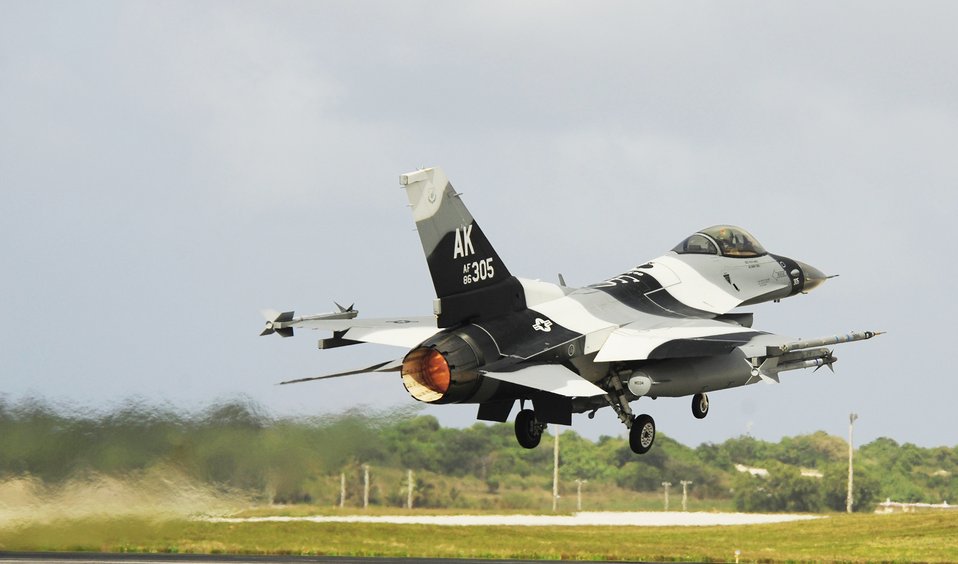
Ready to prowl

During Cope North, an F-16